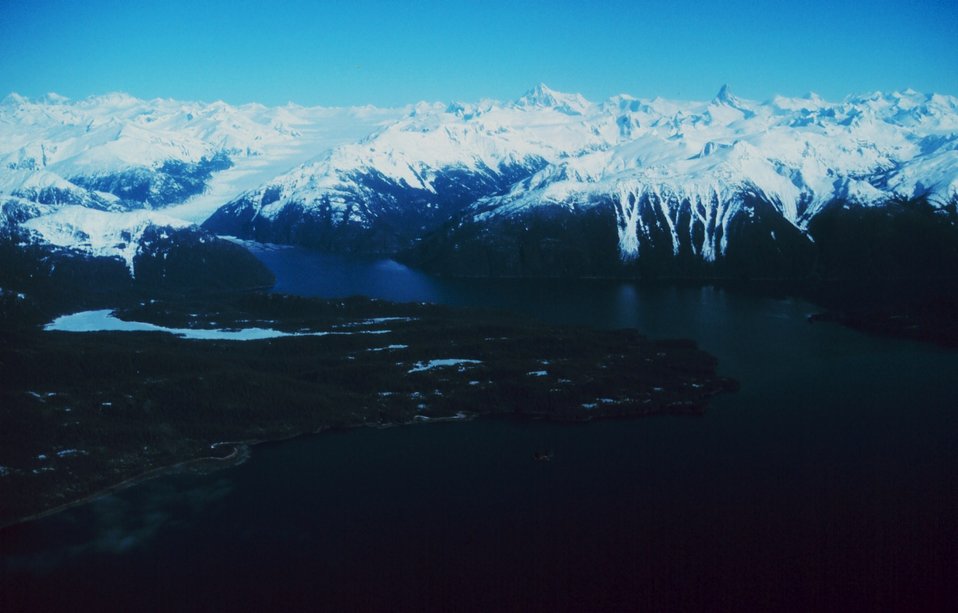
Baird Glacier to left, Mount Burkett, and Devil's Thumb as seen from Thomas Bay.